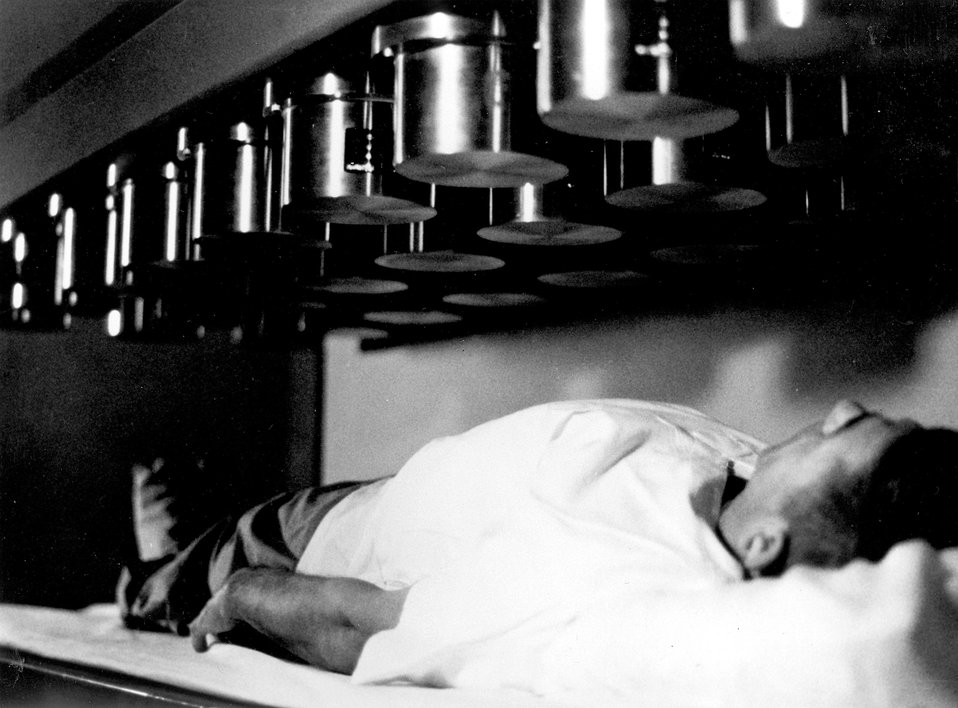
Fifty-four sodium iodide crystals make up the two detector grids. The whole body counter uses in vivo neutron activation analysis by means of gamma measurements.
c.1971